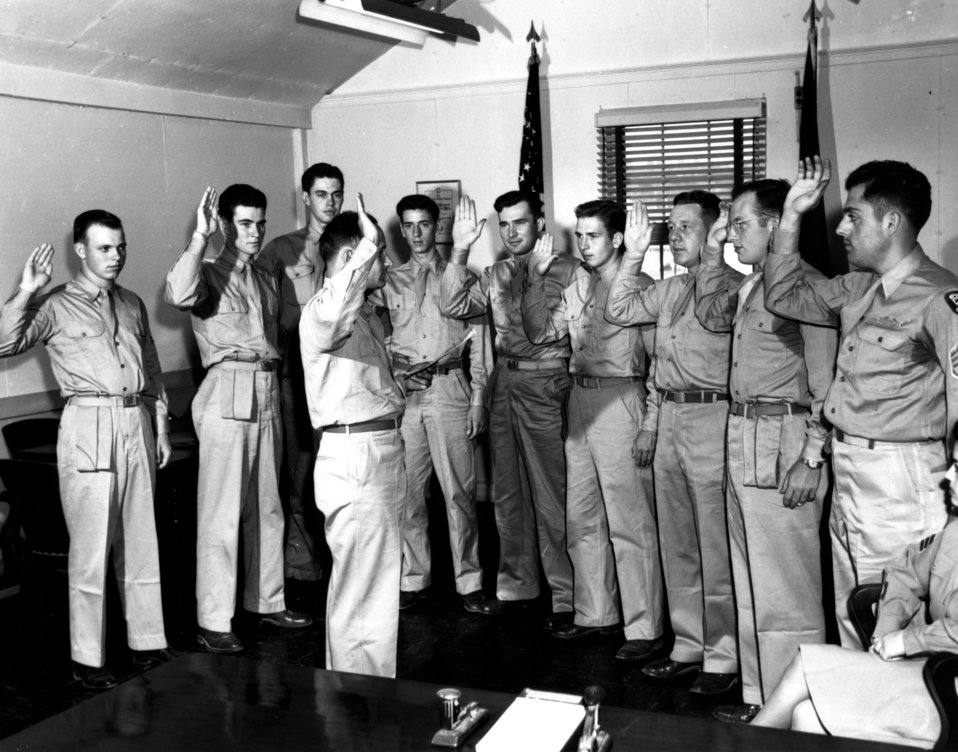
Army Activity at Oak Ridge